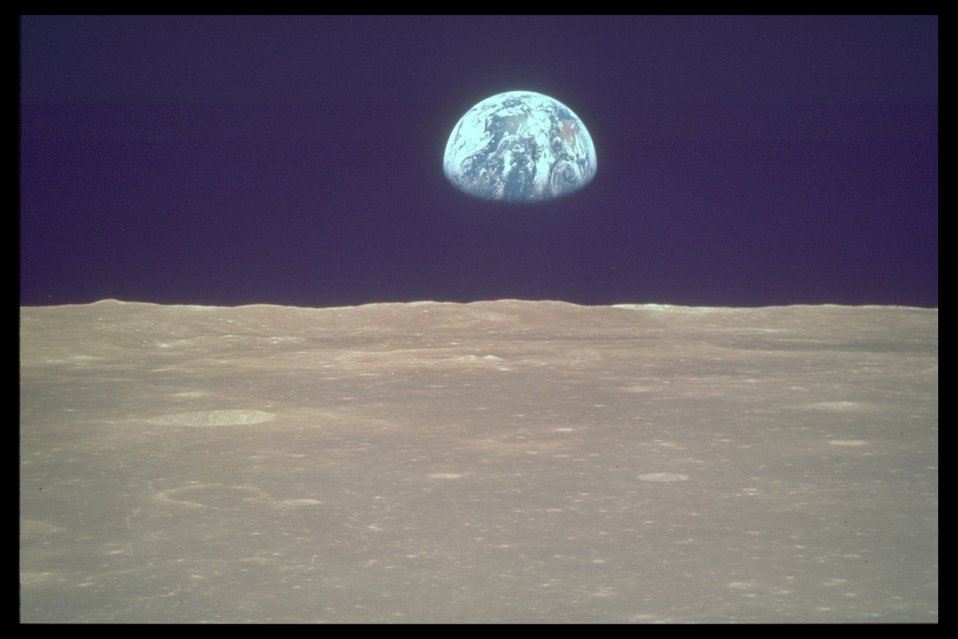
NASA earthrise (earth with moon landscape).